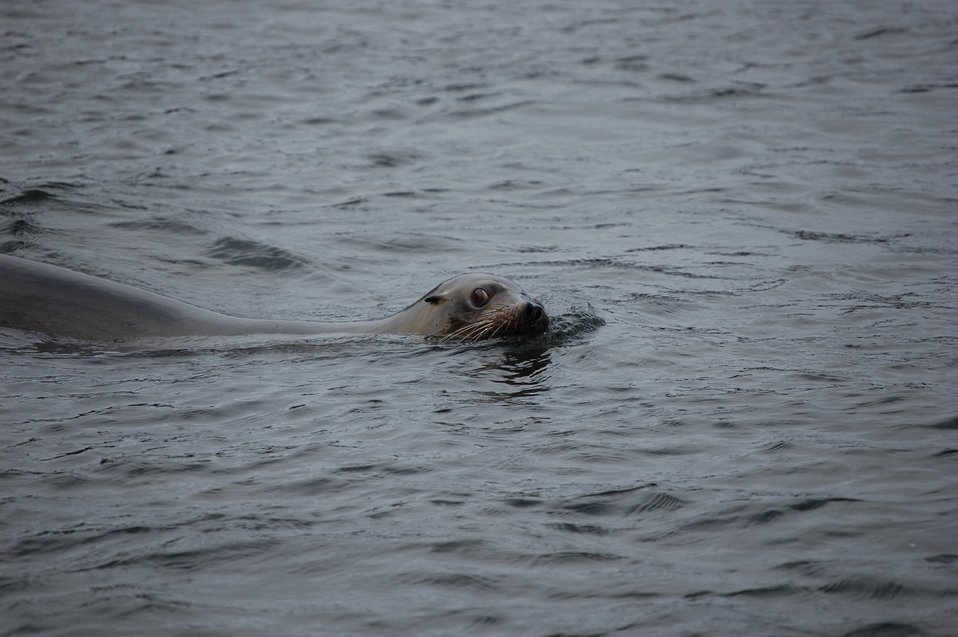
Sea lion swimming looking somewhat askance at the photographer.